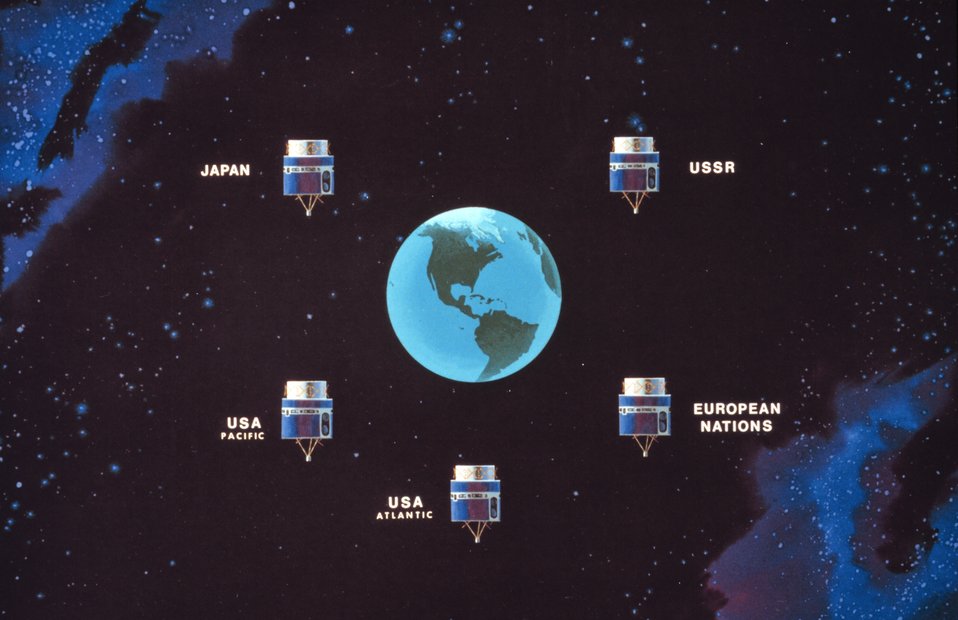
Graphic of constellation of GOES satellites needed to view all continents except Antarctica. Antarctica is viewed by polar-orbiting satellites.